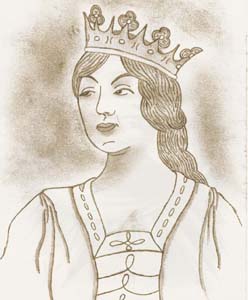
Português: Rainha de Portugal de Direito